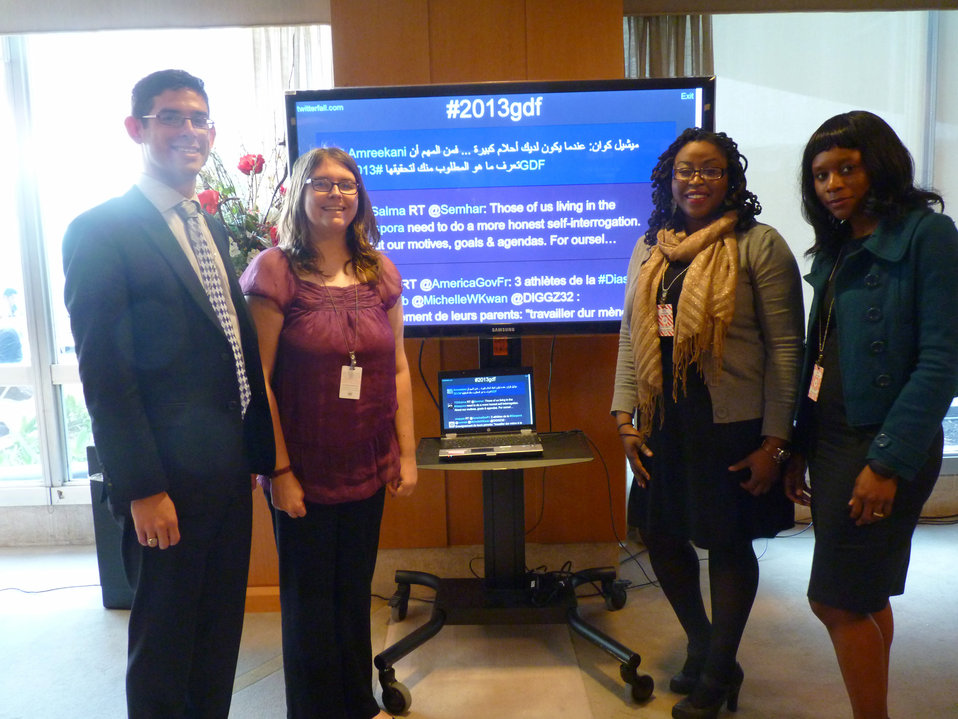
GDF Meetup Participants Pose for a Photo

Participants of the Global Diaspora Forum (GDF) Meetup pose for a photo at the U.S. Department of State in Washington, D.C., on May 14, 2013.